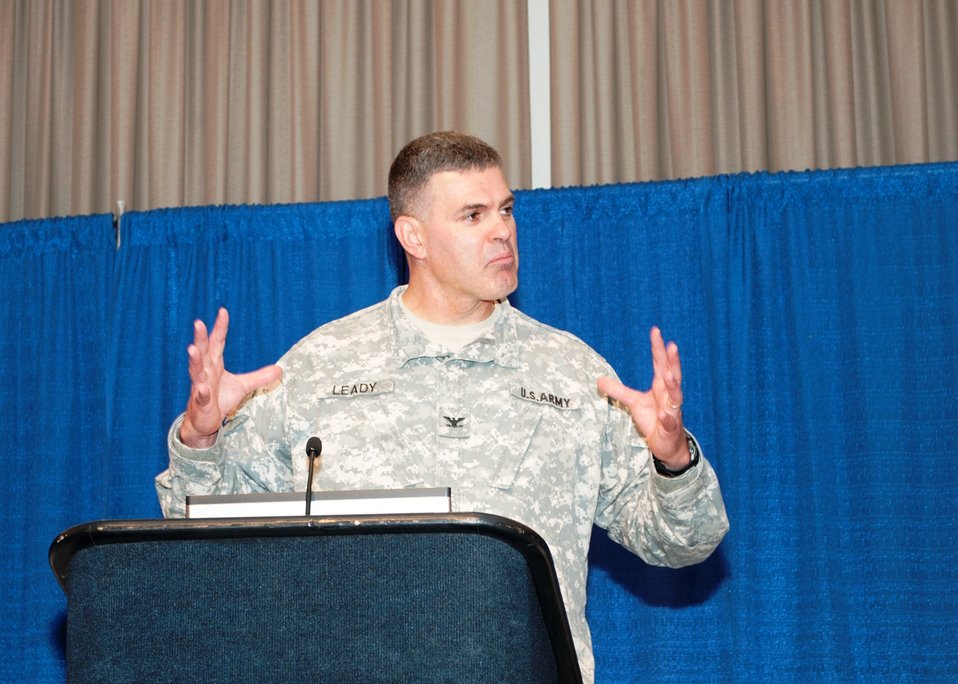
Floodplain Management Association conference 2012

Col. Bill Leady, commander of the U.S. Army Corps of Engineers Sacramento District, speaks to flood risk management professionals from throughout California, Nevada and Hawaii for the Floodplain Management Association’s annual conference, held in Sacramento, Calif., Sept. 4-7, 2012.